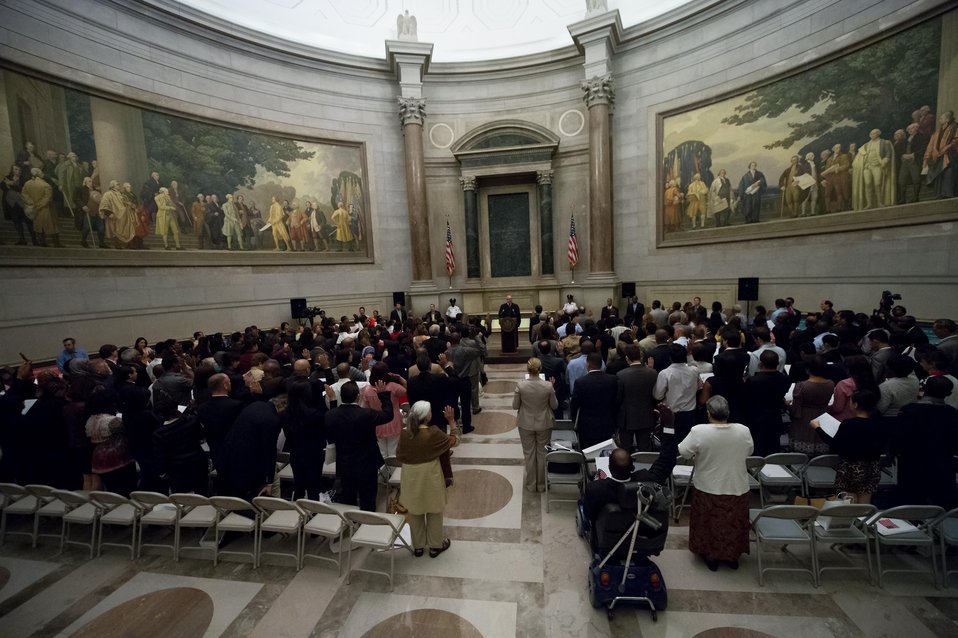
Constitution Day Naturalization Ceremony

The Honorable Royce Lamberth administers the oath of citizenship.